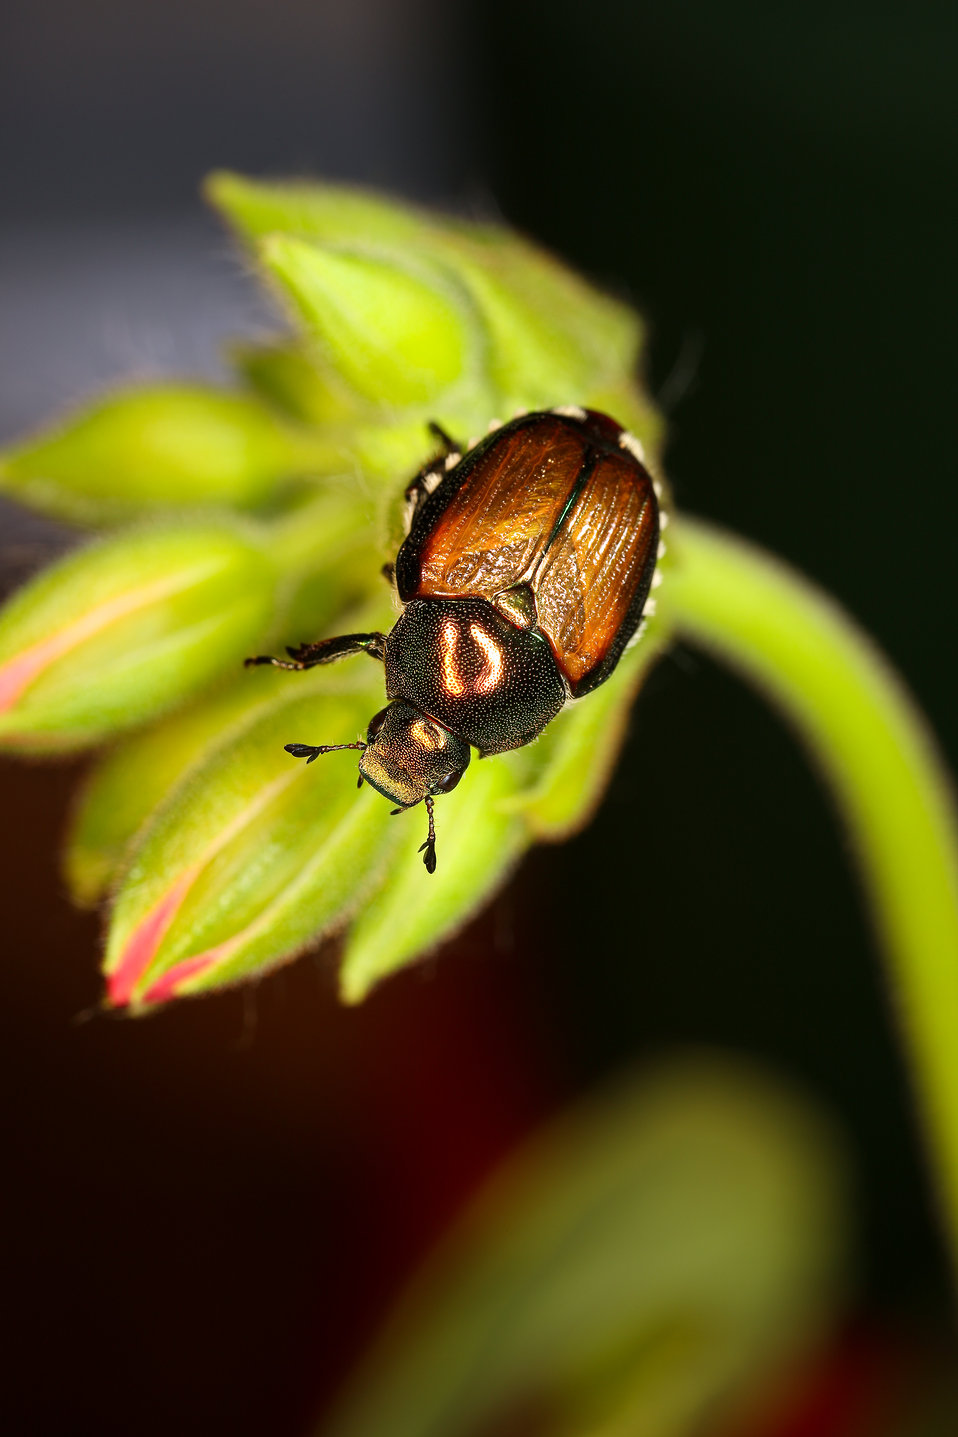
A Japanese beetle (Popillia japonica) sits on a developing cluster of geranium (Pelargonium x Hortorum) flower buds on Mar. 31, 2000. USDA photo by Stephen Ausmus. Mar. 31, 2000